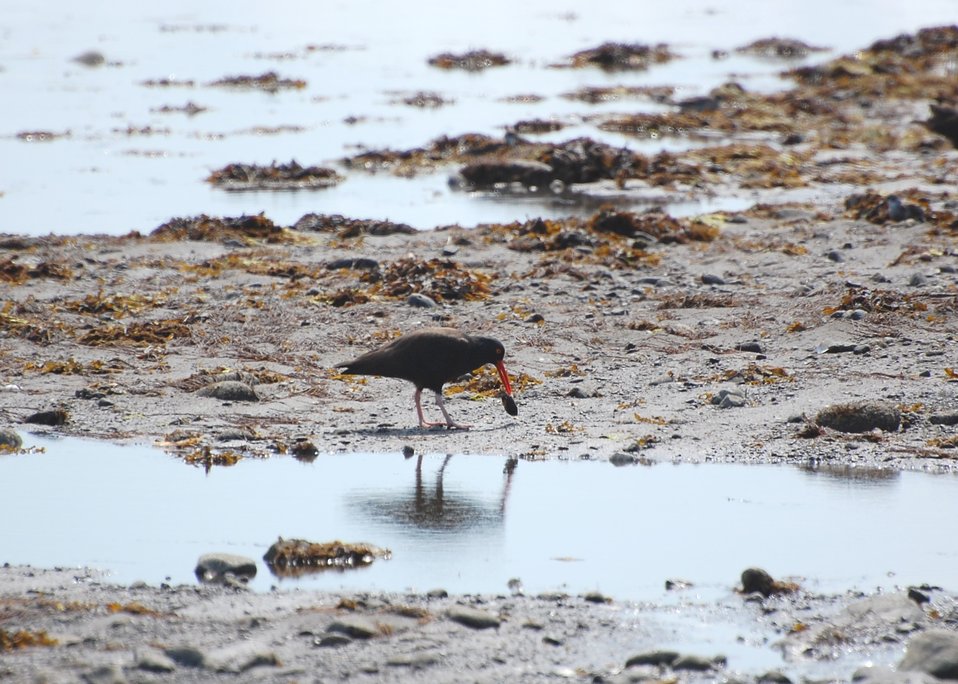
Black Oystercatcher

Kinzarof Lagoon, Izembek National Wildlife Refuge
Photo by Kristine Sowl,
USFWS, Public Domain